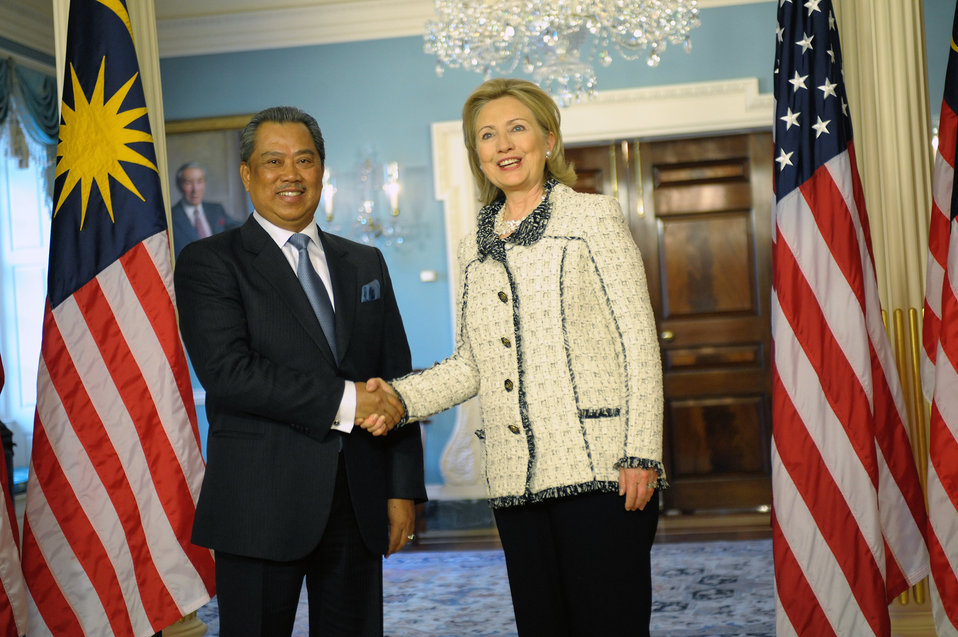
Secretary Clinton Shakes Hands With Malaysian Deputy Prime Minister and Education Minister Tan Sri Dato’ Haji Muhyiddin Bin Mohd. Yassin

U.S. Secretary of State Hillary Rodham Clinton shakes hands with Malaysian Deputy Prime Minister and Education Minister Tan Sri Dato’ Haji Muhyiddin Bin Mohd. Yassin after their bilateral meeting at the U.S. Department of State in Washington, D.C., on January 14, 2010.